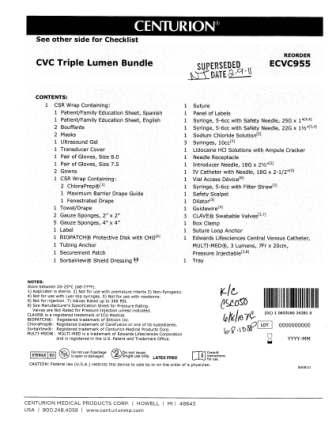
RECALLED - Convenience kits which contain bacteriostatic sodium chloride solution by American Regent

April 1, 2011 - Product Recall - Centurion Medical Products Initiates Voluntary Recall of Customized Convenience Kits (including select Central Venous Catheter, PICC Insertion, and VAD Trays) that contain American Regent’s Bacteriostatic Sodium Chloride Injection, USP, 0.9% 30 mL Multiple Dose Vials.